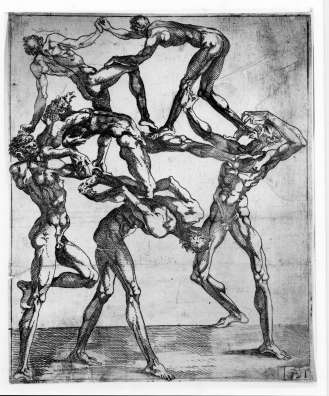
'Human Pyramid', by Juste de Juste